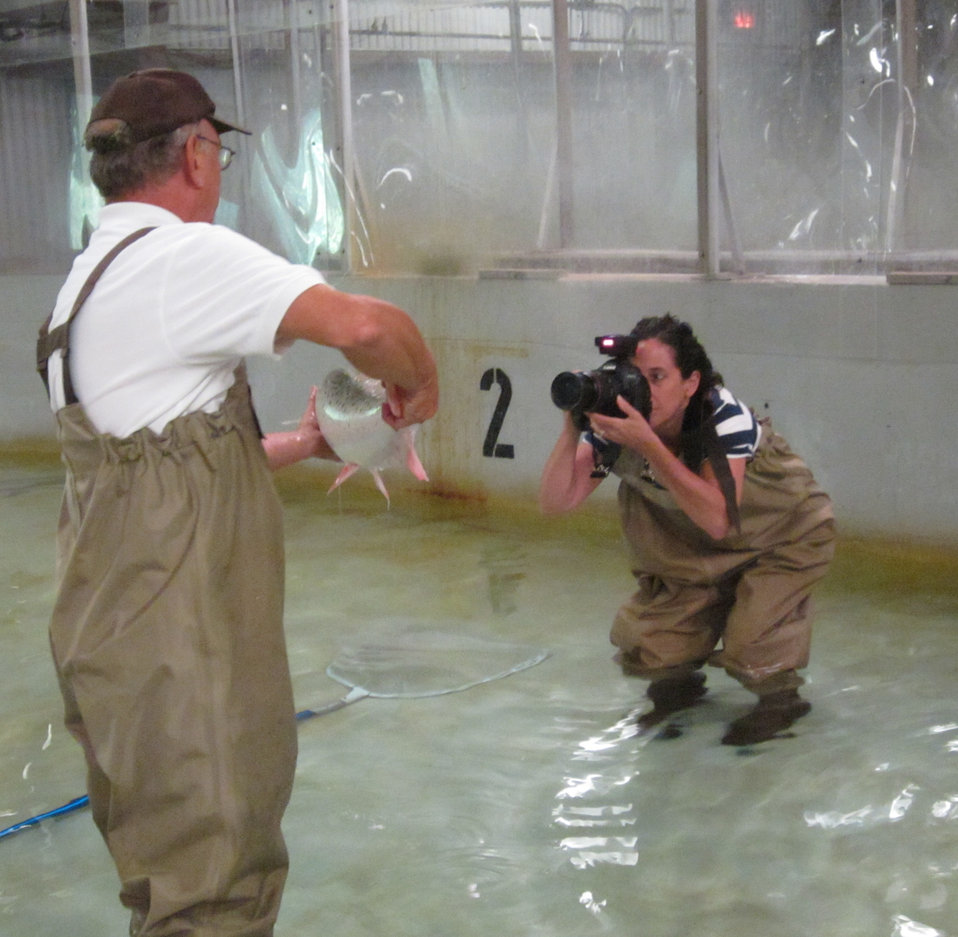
Photographing Atlantic salmon

Sunderland, MA , July 24, 2012: Joanne Rathe, photographer for the Boston Globe, shoots a photo of Richard Cronin National Salmon Station Manager Micky Novak holding an adult Atlantic salmon. Rathe was on site to do a story about the announcement that the U.S. Fish and Wildlife Service would discontinue rearing Atlantic Salmon to restore the species to the Connecticut River.